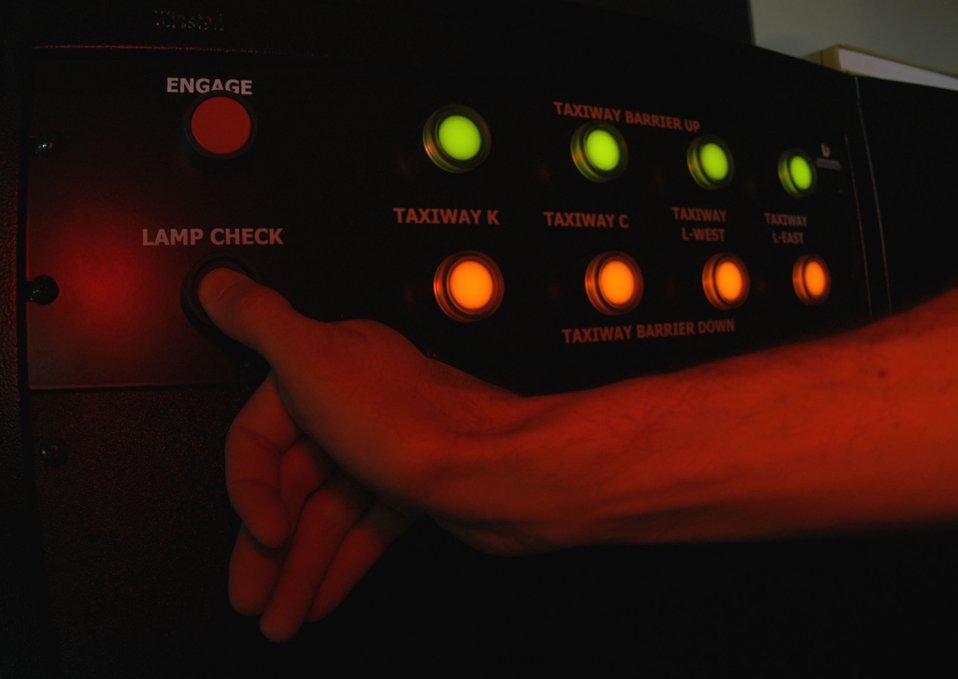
Flightline security at Robins Air Force Base, Ga., will soon be at an all-time high with the installation of a $9 million integrated base defense security system. The state-of-the art system includes long and short range radars, fence sensors, video motion detectors, as well as infrared and other specialized cameras. The restricted area also features a passive and automated active cable barrier system for keeping out unwanted vehicles.